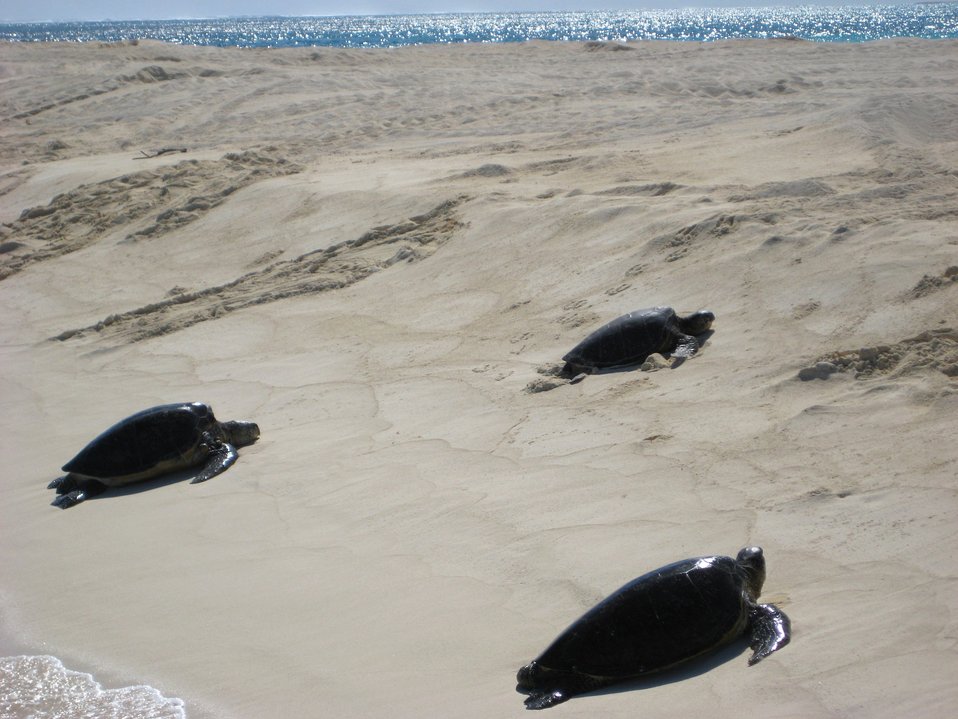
Green turtles coming ashore to lay eggs